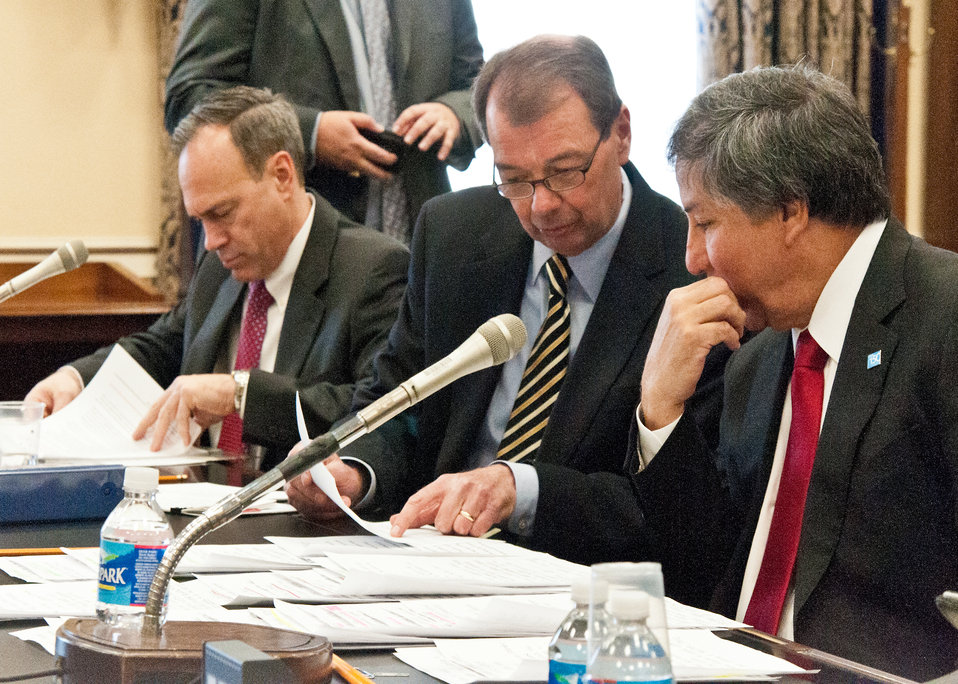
From left: Alan Christian, Acting Administrator, Grain Inspection Packers and Stockyards Administration, Robert Keeney, Acting Administrator, Agricultural Marketing Service and Ed Avalos, Under Secretary, Marketing and Regulatory Programs confer prior to testifying on Capitol Hill before the House Agriculture Appropriations Subcommittee on fiscal year 2013 budget requests for Marketing and Regulatory Programs in Washington, D.C., Tuesday, March 6, 2012.